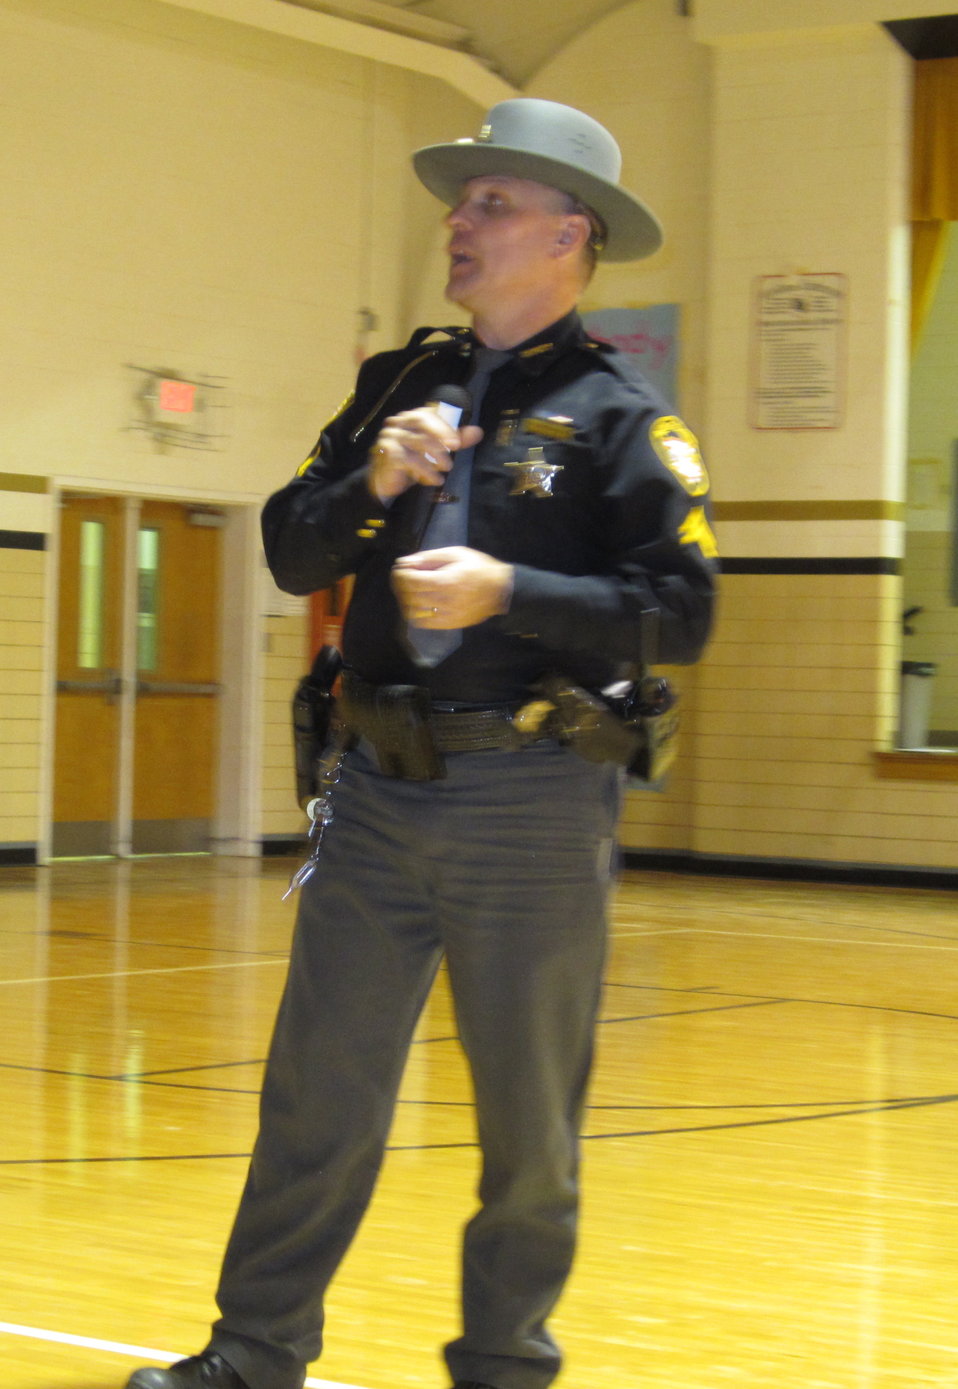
South Central High SADD Assembly Greenwich, OH

Speaker Corporal Kerber from the Huron County Sheriff’s Department speaks to 58 students at the NDFW assembly in Greenwich.